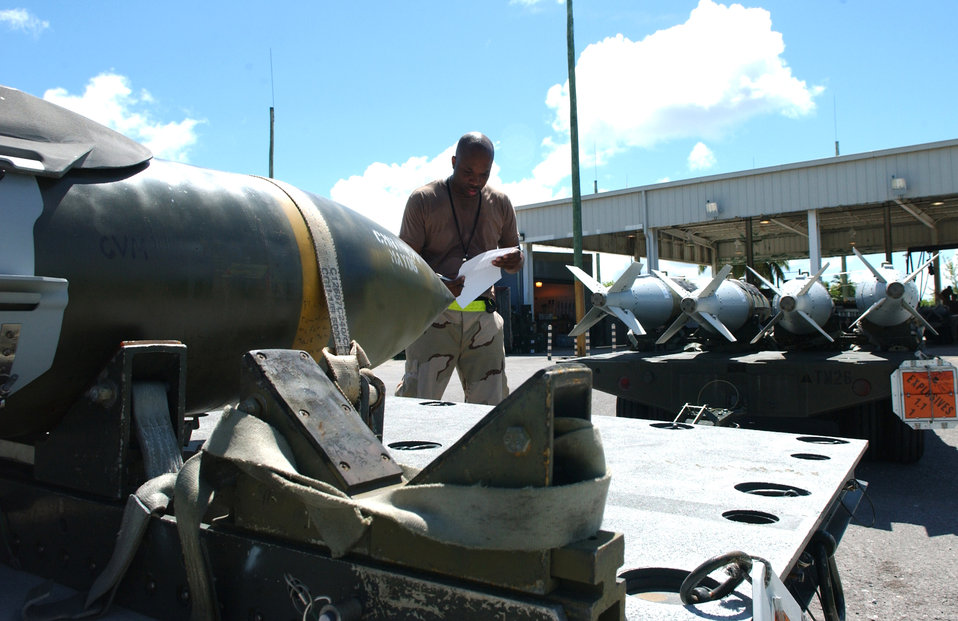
Munitions check

Tech. Sgt. Wilbert Terrell inspects a 2,000-pound bomb before doing a tear down and rebuild of the bomb at a base supporting Operating Enduring Freedom on Wednesday, May 17, 2006. The Airman, of the 40th Air Expeditionary Group, deployed here from Barksdale Air Force Base.